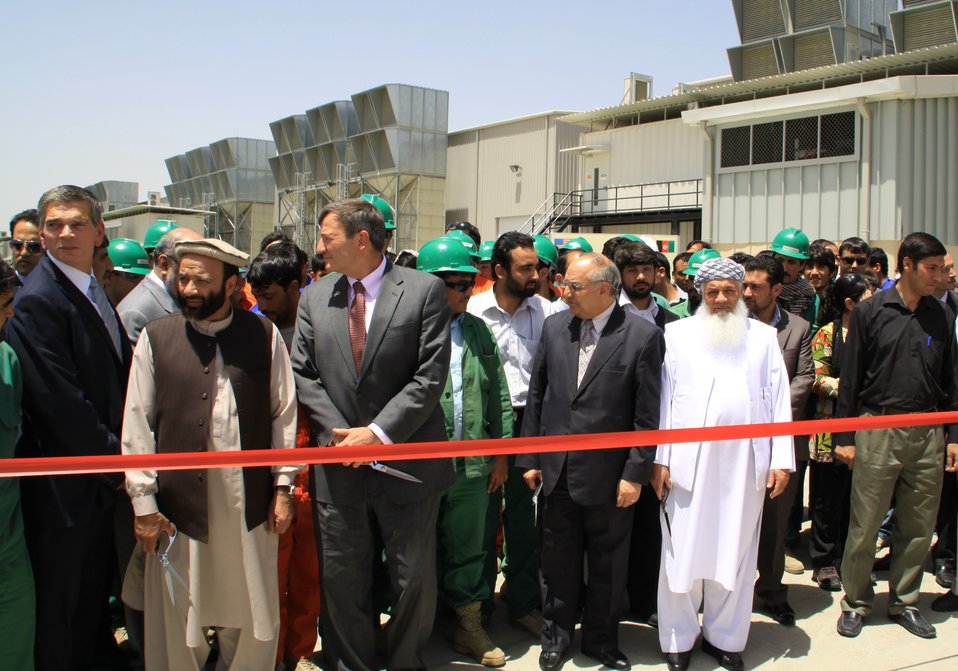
105 MW Tarakhil Power Plant Handover